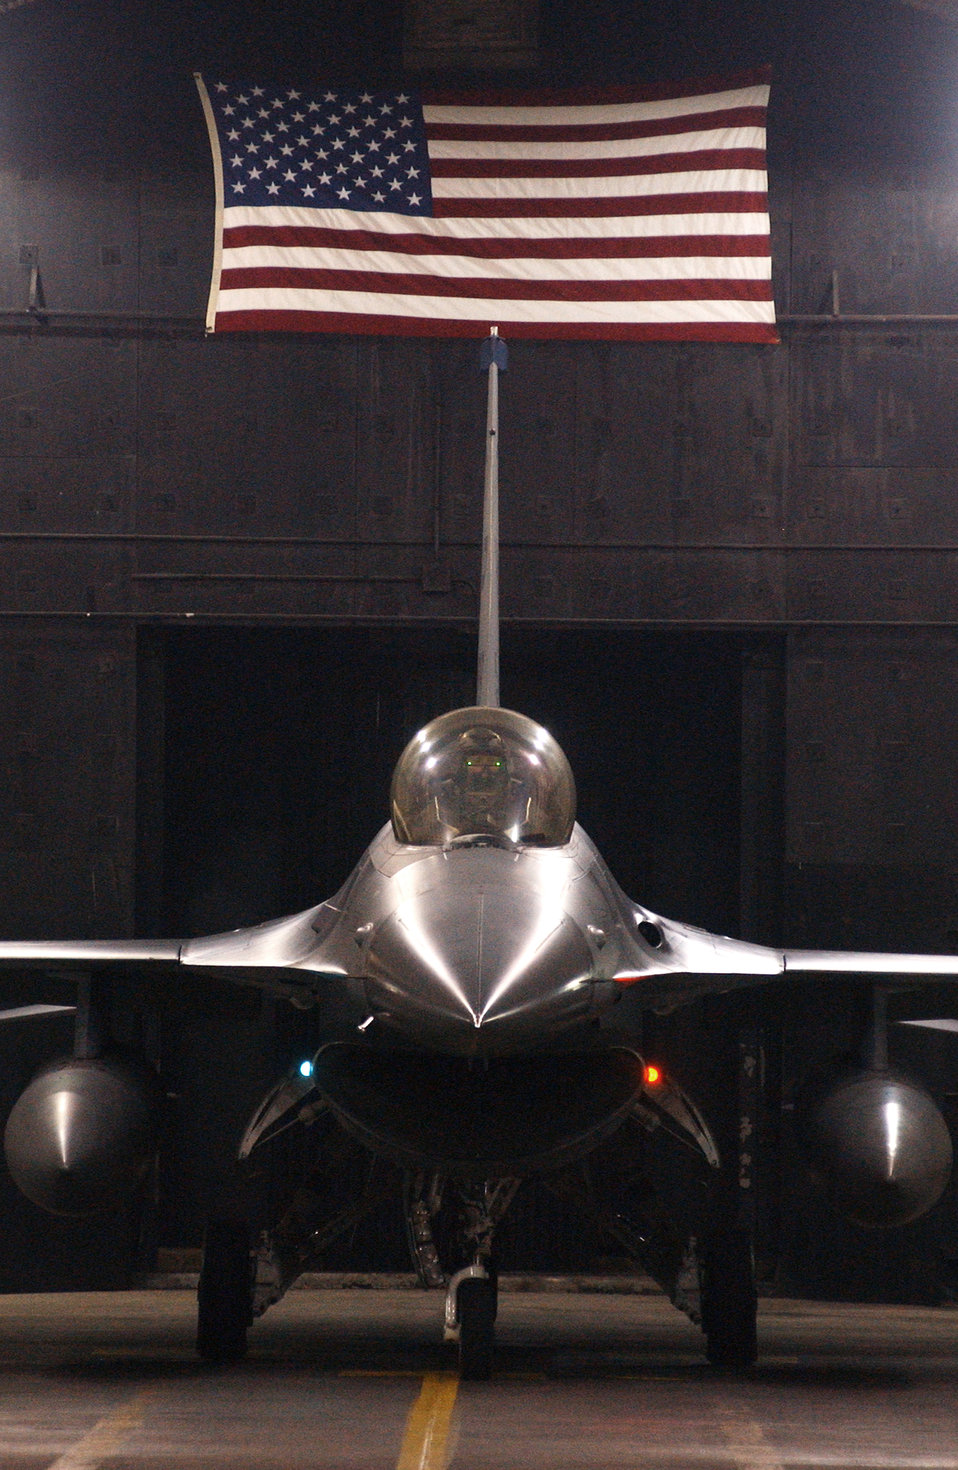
Ready to strike

KUNSAN AIR BASE, South Korea -- F-16 Fighting Falcon pilot 1st. Lt. Amy RingWald waits in a hangar for clearance from the tower to taxi toward the runway during an exercise here Jan. 25. Lieutenant RingWald is assigned to the 35th Fighter Squadron.